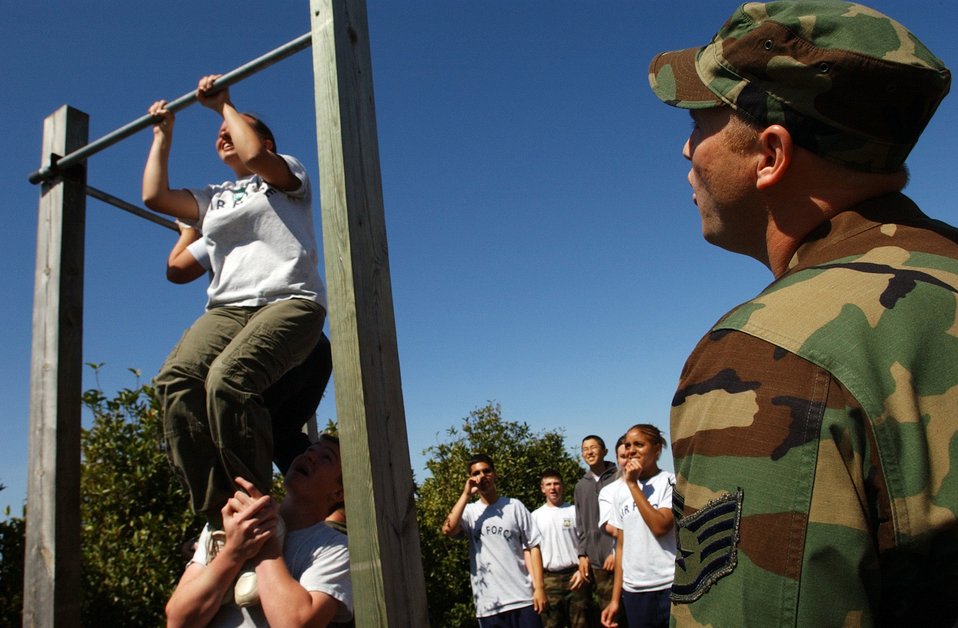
Give me one more

Junior ROTC students compete to do pull ups with some motivation from Staff Sgt. Scott McNeal March 30 in New London, N.C. Air National Guardsmen from New London hosted the JROTC open house.